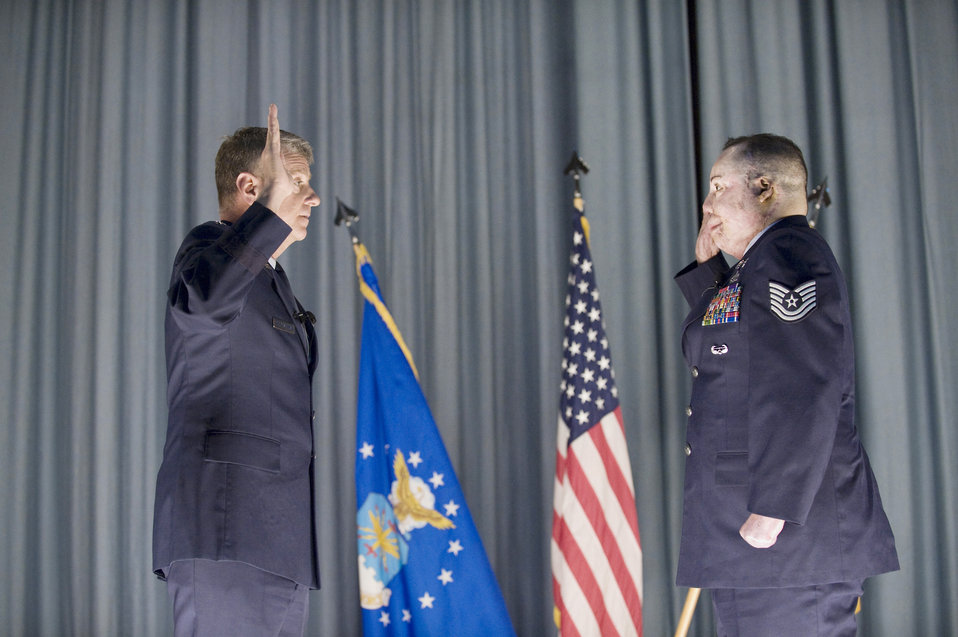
Tech. Sgt. Del Toro reenlists

Maj. Gen. Anthony Przybyslawski, vice commander of Air Education and Training Command, administers the oath of enlistment Feb. 8 to Tech. Sgt. Israel Del Toro in the nearly packed base theater at Randolph Air Force Base, Texas. Sergeant Del Toro suffered burns to more than 80 percent of his body after his vehicle was struck by an improvised explosive device in Afghanistan.